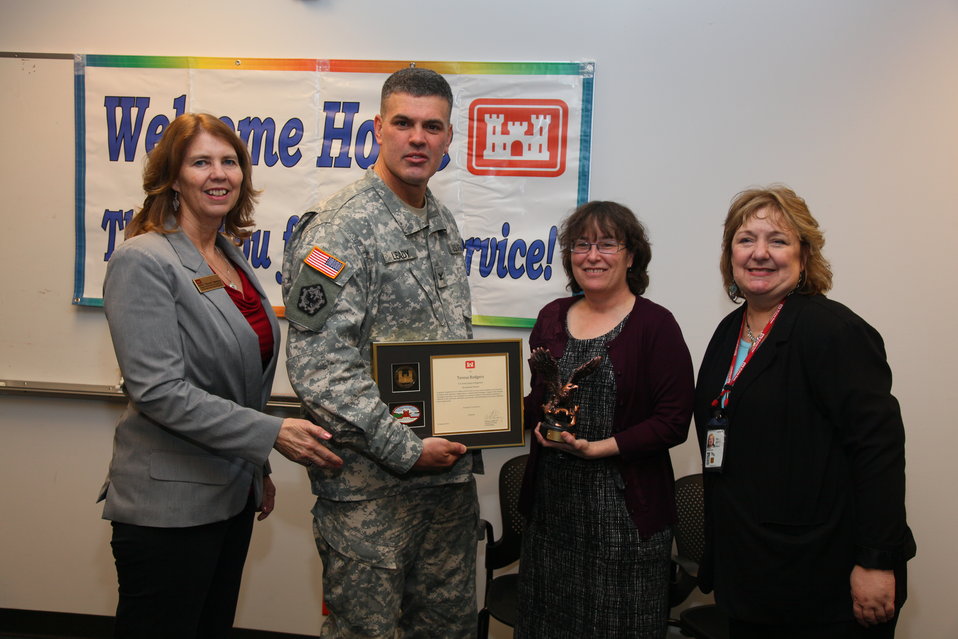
Sacramento District welcomes home Afghanistan volunteers

Sacramento District geologist Teresa Rodgers receives an award from district commander, Col. Bill Leady, for her service in Afghanistan at a welcome-home ceremony in Sacramento, Calif., Jan. 13, 2012. Five district employees were honored for recent Overseas Contingency Operations service at the event. In 2011 alone, the district saw 27 employees volunteer for service in Overseas Contingency Operations.